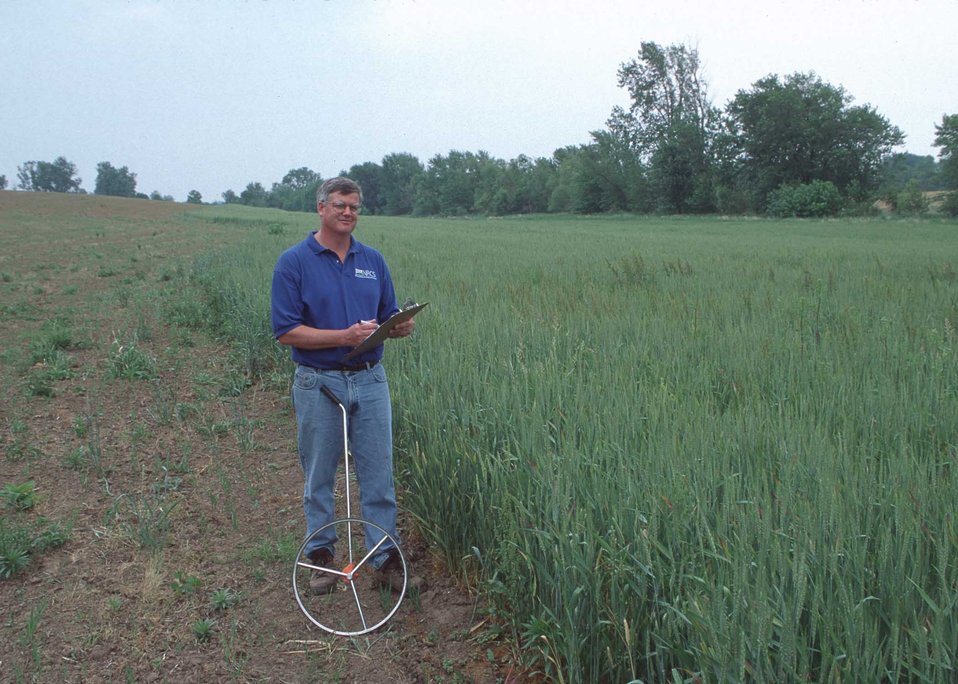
NRCS District Conservationist Hal Pyle checks information along a buffer in Sangamon County, Illinois. This buffer traps sediment from the cropland preventing it from going into the stream. The grasses also provide food and nesting areas for song birds.